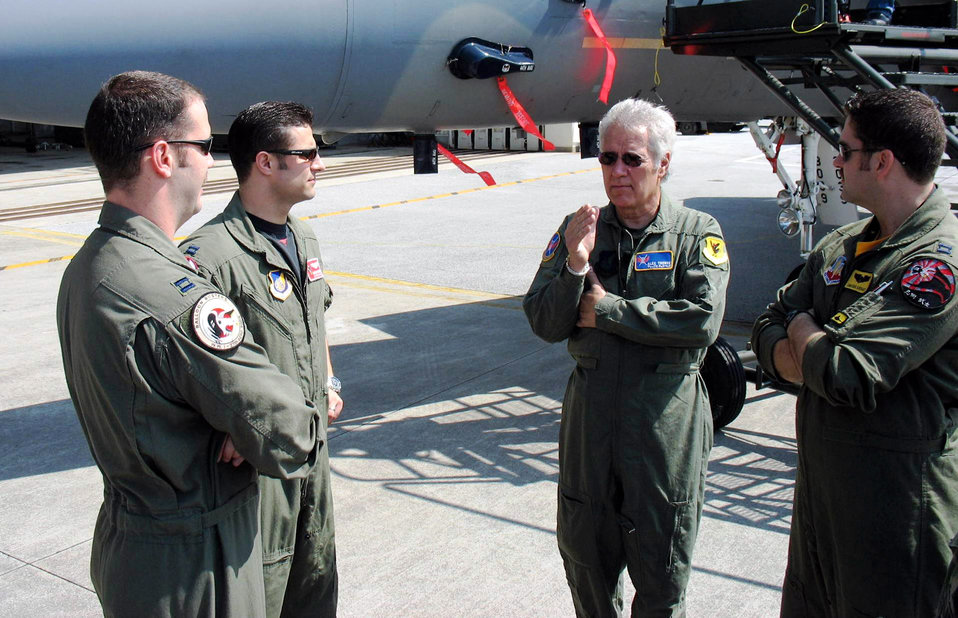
'Jeopardy' host visits Kadena Airmen

Alex Trebek (second from right) talks to (from left) Capt. Phil Colomy, Capt. Kirby Enser and Capt. Jonathan Airhart during a